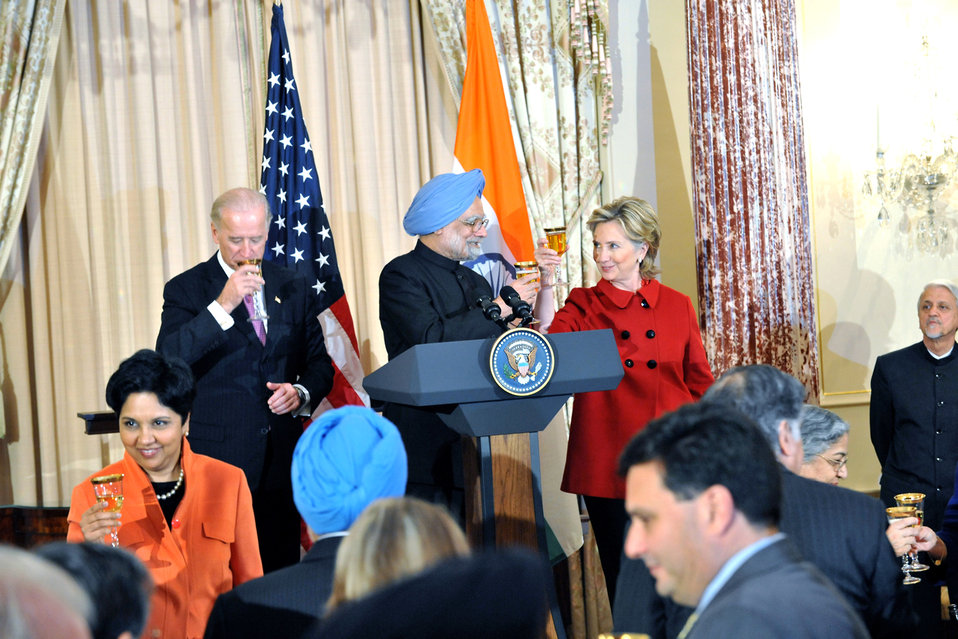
Vice-President Biden, Secretary Clinton Co-Host Social Lunch in Honor of Indian Prime Minister

U.S. Vice-President Joe Biden Dr. Jill Biden co-host a social lunch with U.S. Secretary of State Hillary Rodham Clinton in honor of Indian Prime Minister H.E. Dr. Manmohan Singh and Dr. Gurusharan Kaur at the U.S. Department of State in Washington, DC November 24, 2009.